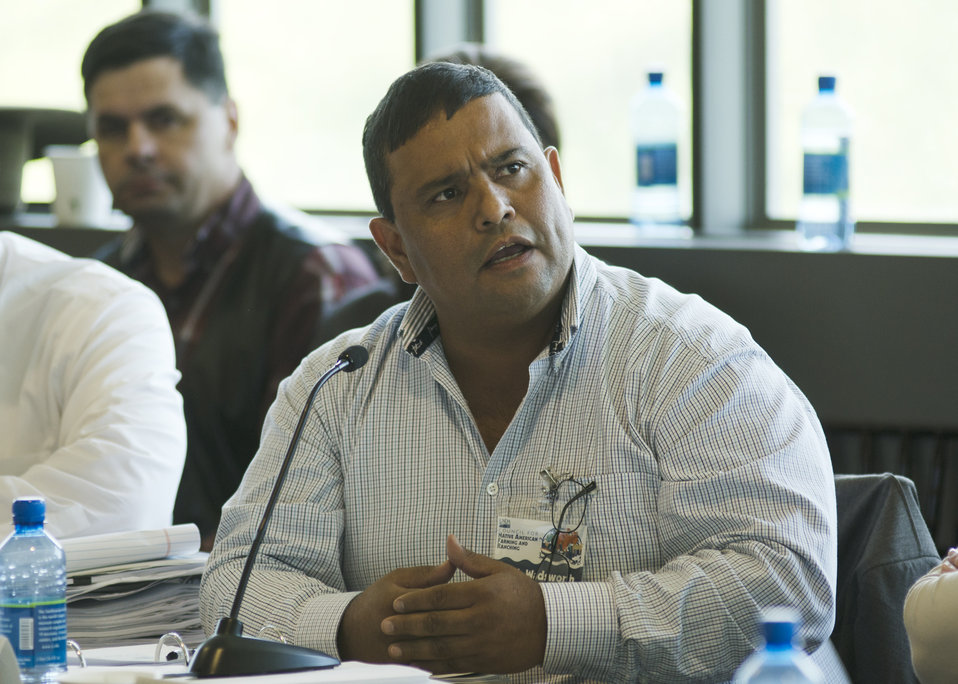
Natural Resources/Range Management Shoshone-Bannock Tribes in Blackfoot, ID., Mark Wadsworth speaks at the first business meeting of the U.S. Department of Agriculture’s (USDA) Council for Native American Farming and Ranching (CNAFR) held at the National Museum of the American Indian in Washington, D.C., on Tuesday, Aug. 14, 2012. CNAFR was created to advise the Secretary on ways to eliminate barriers to participation for Native American Farmers and Ranchers in USDA programs. The Council was established as part of the Keepseagle settlement, and is conducted under the oversight of USDA's Office of Tribal Relations under the Office of the Secretary of Agriculture.